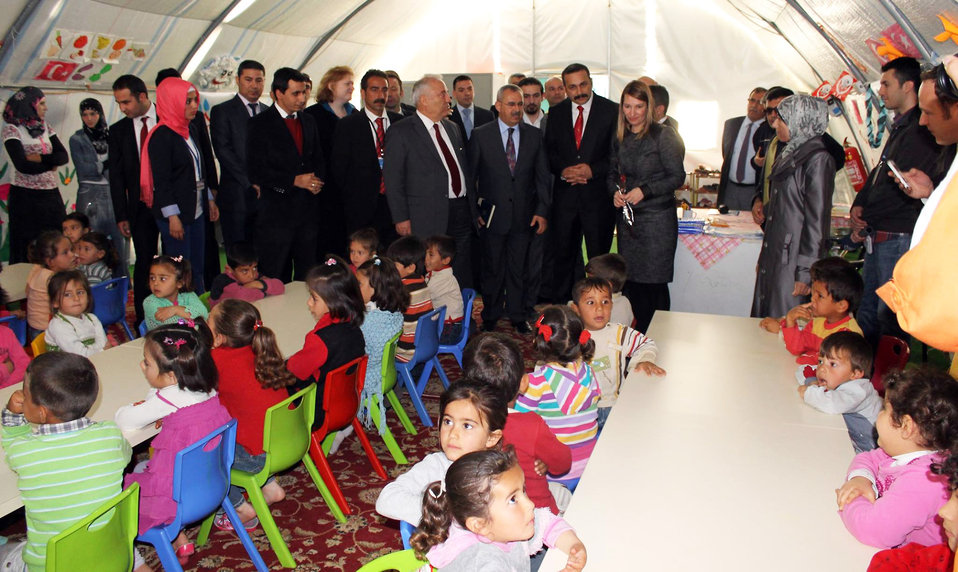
Deputy Secretary Higginbottom Visits a Classroom at a Syrian Refugee Camp

Deputy Secretary of State for Management and Resources Heather Higginbottom speaks with Turkish officials and Syrian children in a classroom at a Syrian Refugee Camp outside of Adana, Turkey, on March 21, 2014.